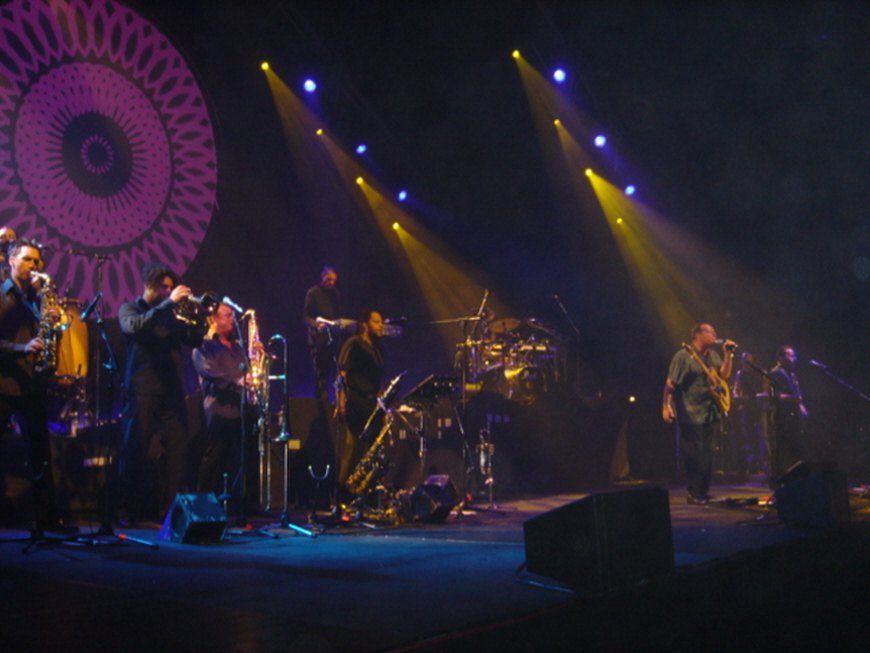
Picture of UB40 performing in Wellington New Zealand, 2004